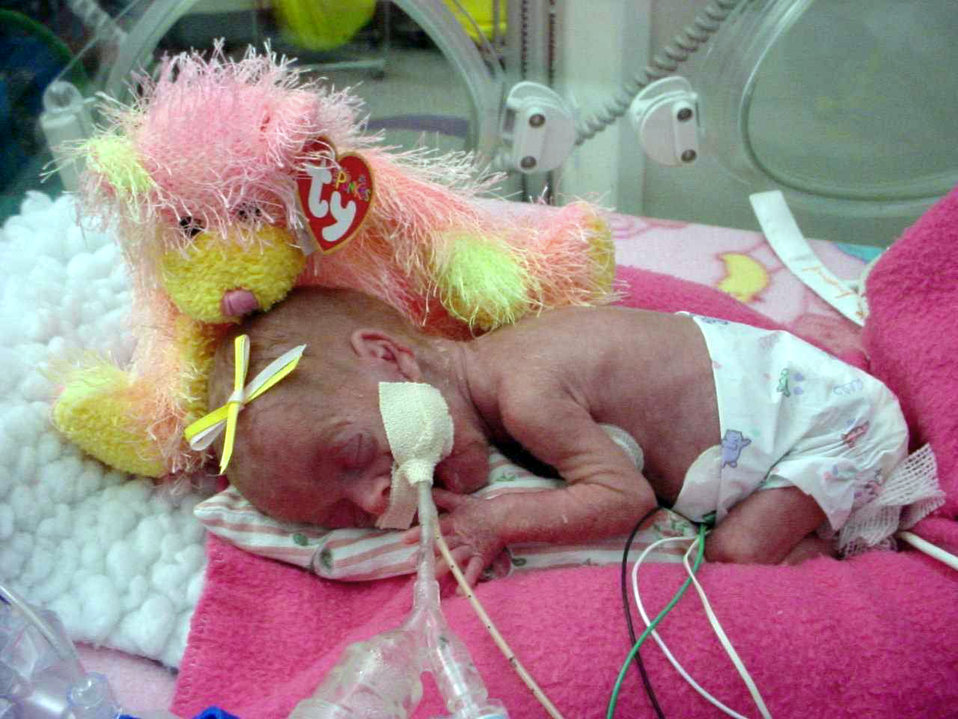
Leave donations help during crisis

SALT LAKE CITY -- Grace Davenport, 2 weeks old, sleeps during an extended stay in a hospital neonatal intensive care unit here. Grace was born four months premature, along with a twin brother who died two days after birth. Her mother, Stacy Davenport, received donated leave during this time through the Federal Voluntary Leave Transfer Program. Mrs. Davenport works in the maintenance directorate at Hill Air Force Base, Utah.